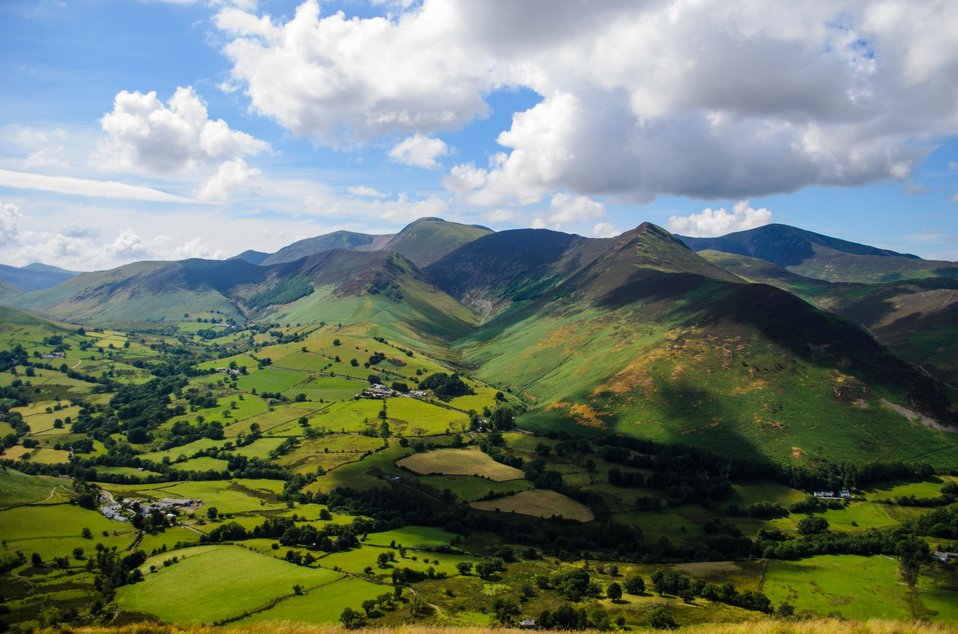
Landscape - lake district.